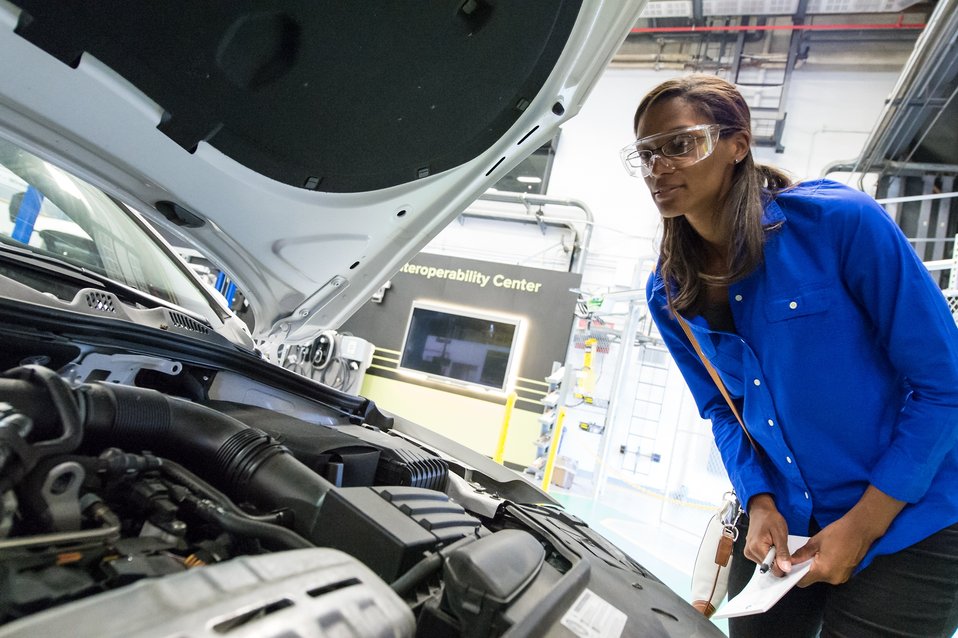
PARTICIPANTS IN THE 2013 ARGONNE SUSTAINABILITY TEACHERS WORKSHOP.

Workshop participants had an opportunity to explore Argonne vast array of green transportation and energy efficiency research.